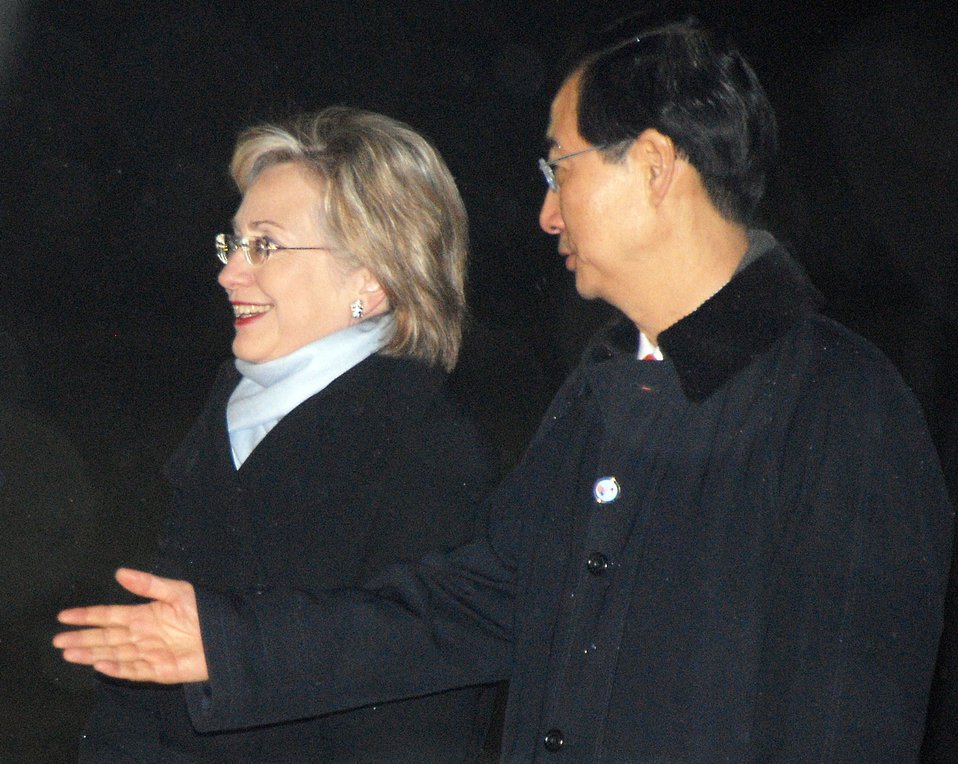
Secretary Clinton Arrives in South Korea

U.S. Secretary of State Hillary Rodham Clinton with former Primer Minister and Ambassador-designate to the United States Han Duck-soo at Seoul Air Base near Seoul, South Korea February 19, 2009.